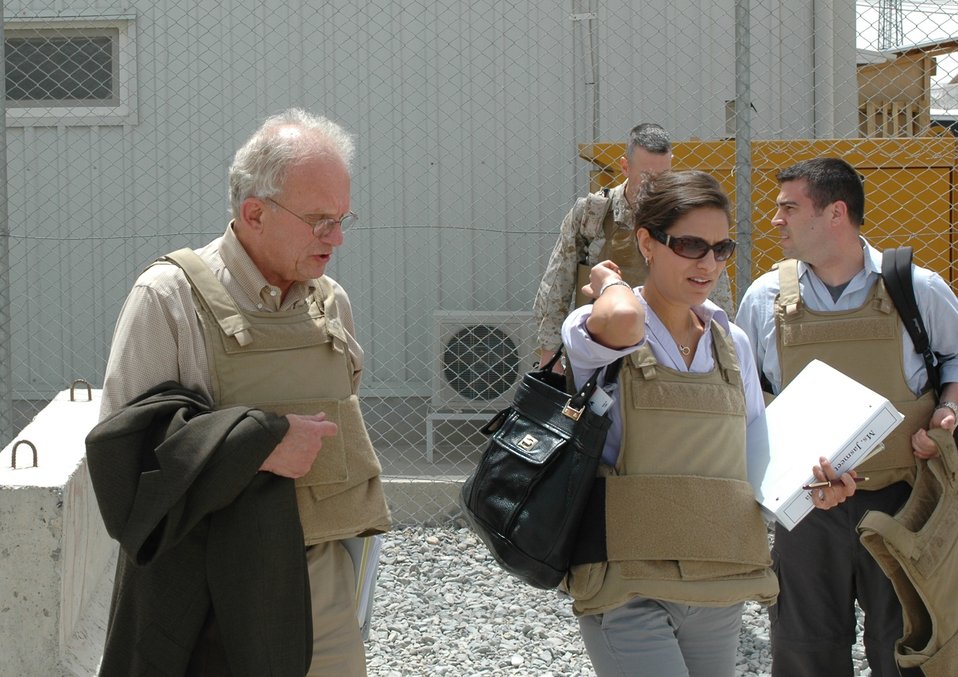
CODEL Berman